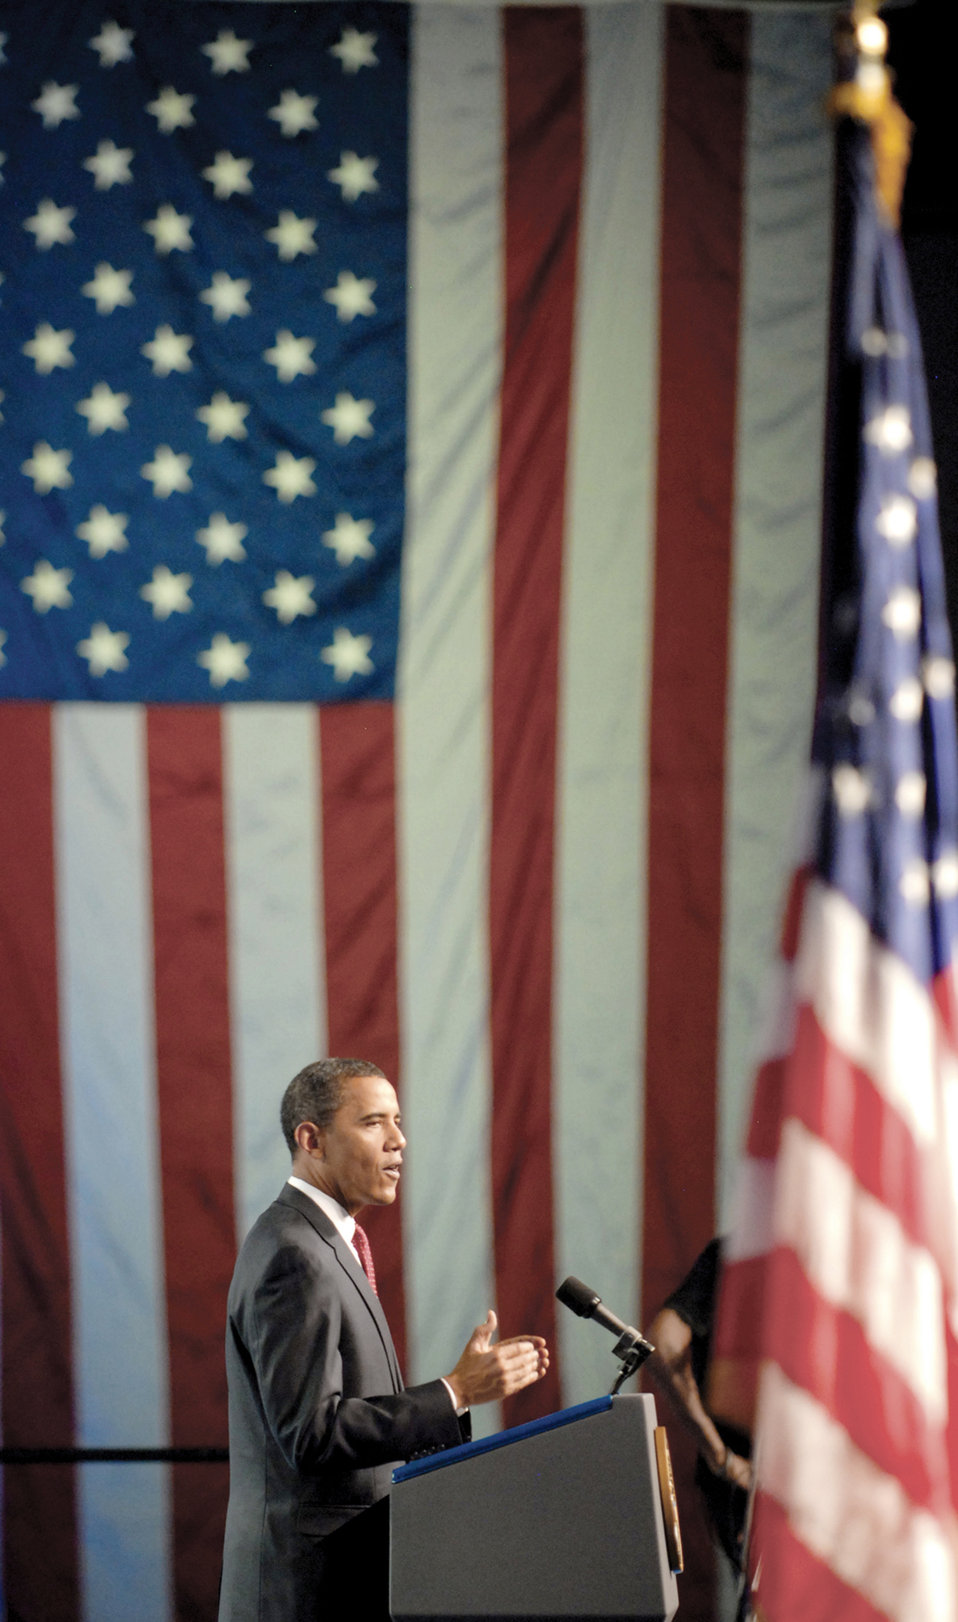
President meets Luke Airmen

President Barack Obama speaks to a crowd of more than 6,000 people, including 51 Airmen from Luke Air Force Base, Ariz., at the 110th Veterans of Foreign Wars national convention Aug. 17 in Phoenix. Luke AFB officials received an invitation from the VFW organizational team for 50 Airmen to attend the opening session of the convention, as well as to hear the keynote speaker, President Obama.